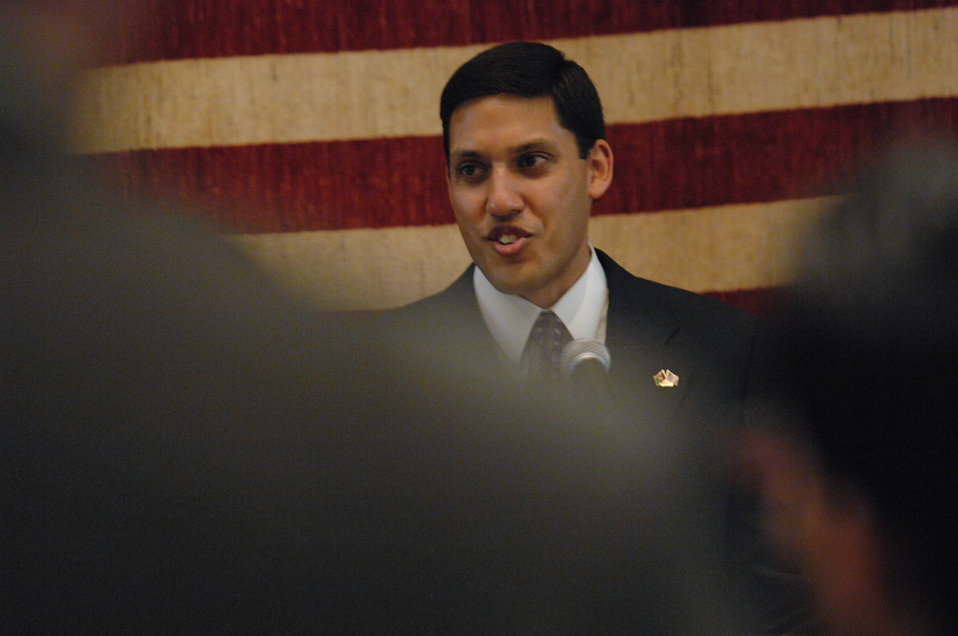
Shah

Dr. Rajiv Shah, Administrator of the United States Agency for International Development (USAID), holds a town hall meeting at the U.S. Embassy in Kabul, Afghanistan on Tuesday, February 8, 2011. (S.K. Vemmer/Department of State)